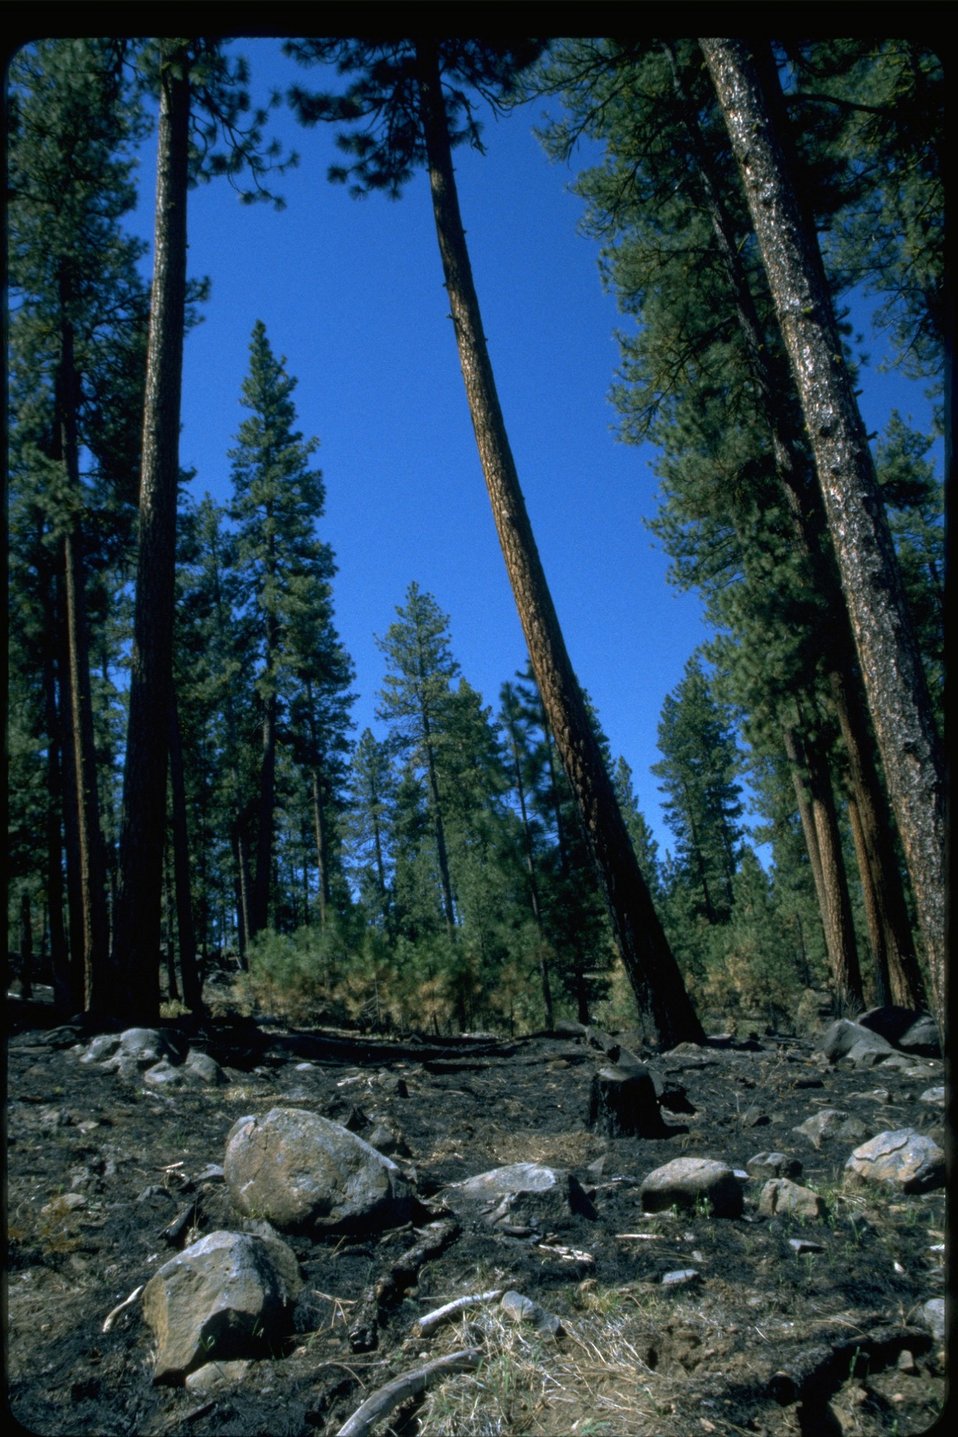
Prescribed burn area CCC (Civilian Conservation Corps) road near Barnes Valley.